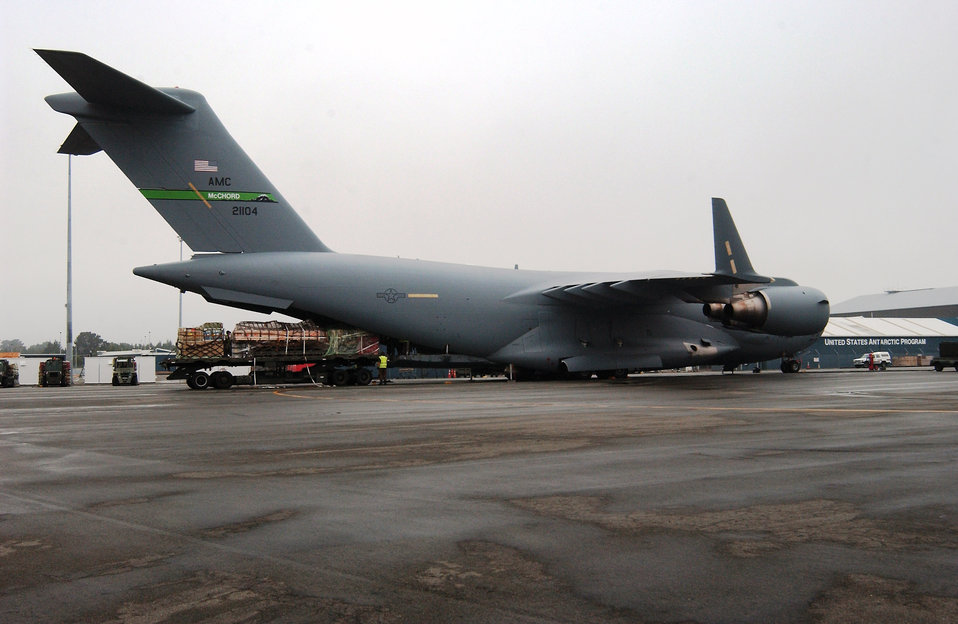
McChord Airmen fuel Operation Deep Freeze

Cargo is loaded on a C-17 Globemaster III at Christchurch International Airport, New Zealand, prior to an Operation Deep Freeze mission to Antarctica Dec. 2. The C-17 is from McChord Air Force Base, Wash.